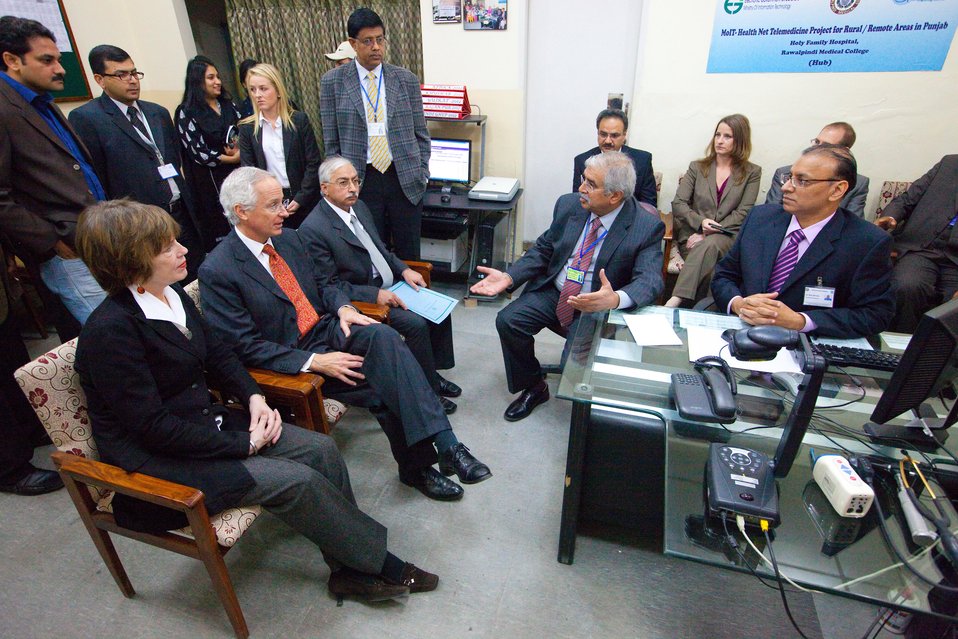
Telemedicine

Rawalpindi, January 5, 2012 – Ambassador Cameron Munter and his wife Dr. Marilyn Wyatt sitting with Dr. Asif Zafar Malik, Project Director Telemedicine/training and other officials.